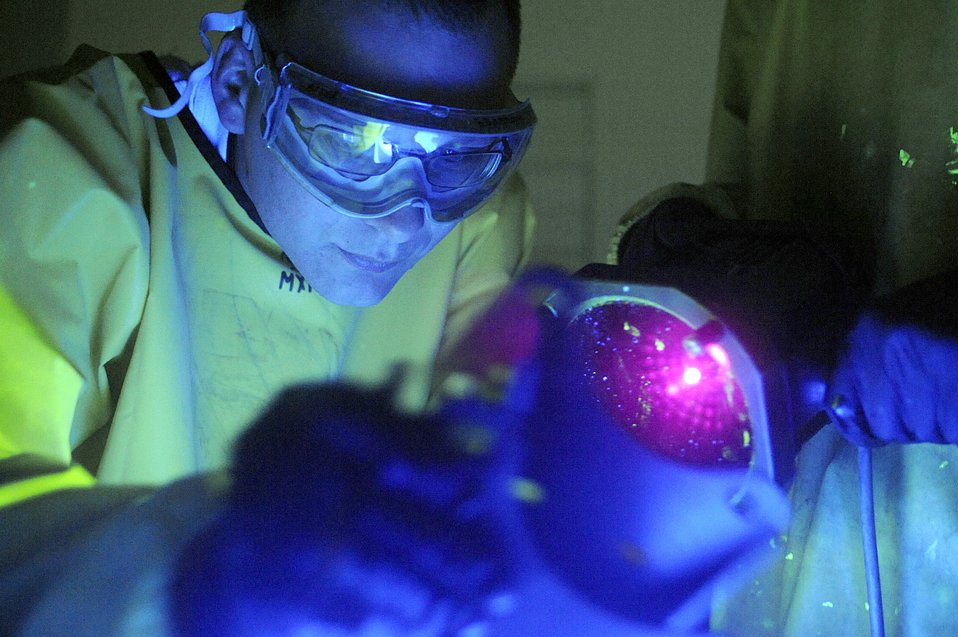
Ellsworth ultraviolet light inspection

Staff Sgt. Ehud Torres inspects a forward support bracket under ultraviolet light May 20, 2010, at Ellsworth Air Force Base, S.D. Sergeant Torres is a non-destructive inspection technician with the 28th Maintenance Squadron.